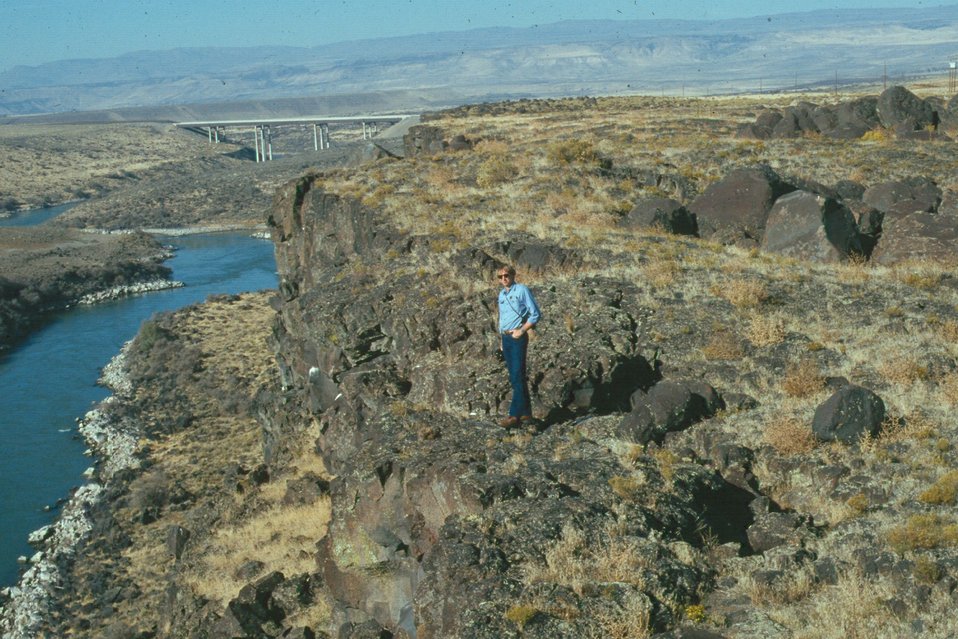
On Snake River near King Hill Four Rivers LSRD Lower Snake River District